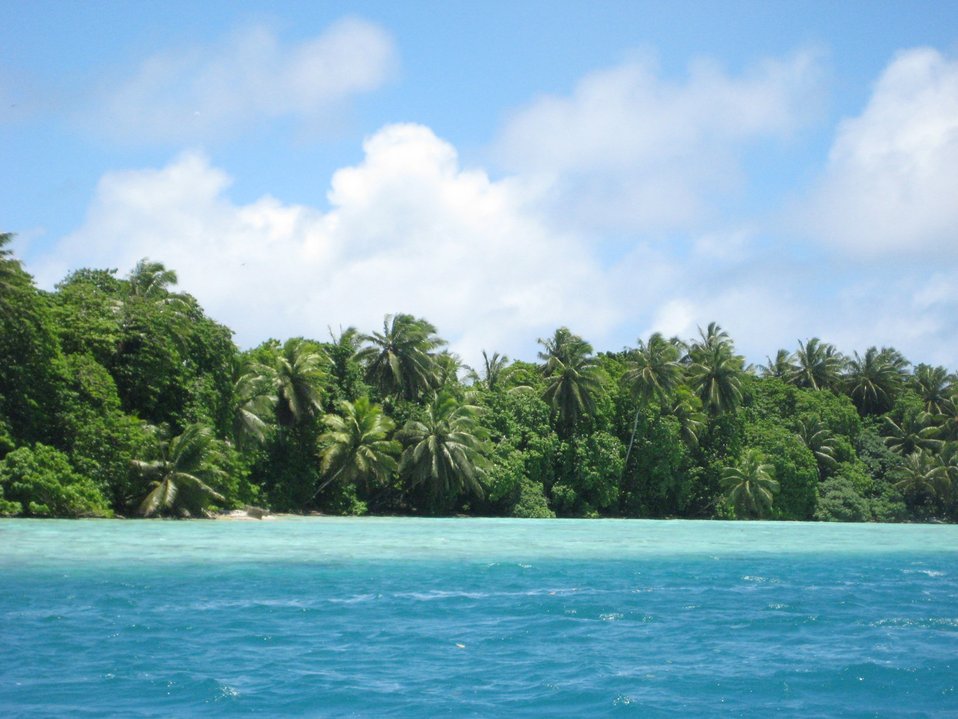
Vegetation including the ubiquitous palm trees of the tropical Pacific cover Palmyra Island and its associated offshore islets.